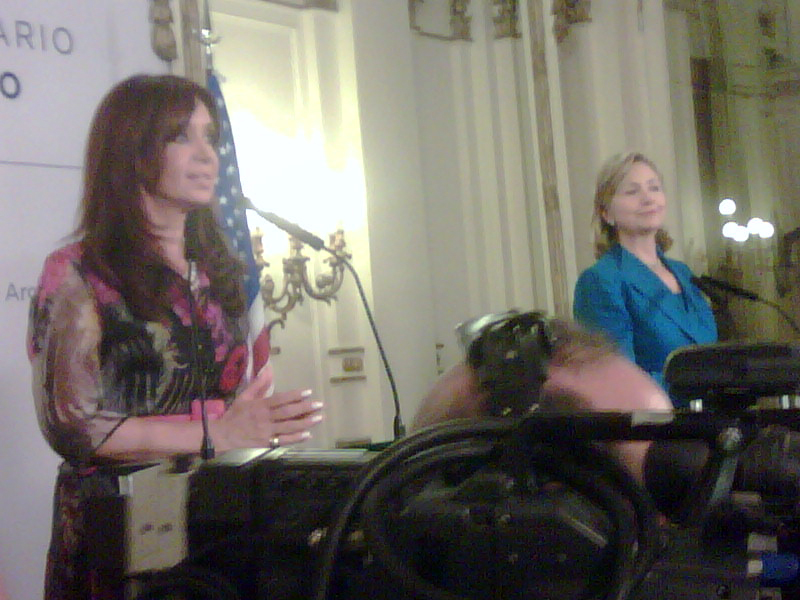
Secretary Clinton Holds Press Conference With Argentine President

U.S. Secretary of State Hillary Rodham Clinton and Argentine President Cristina Fernández de Kirchner during a press conference following a bilateral meeting in Buenos Aires, Argentina March 1, 2010.